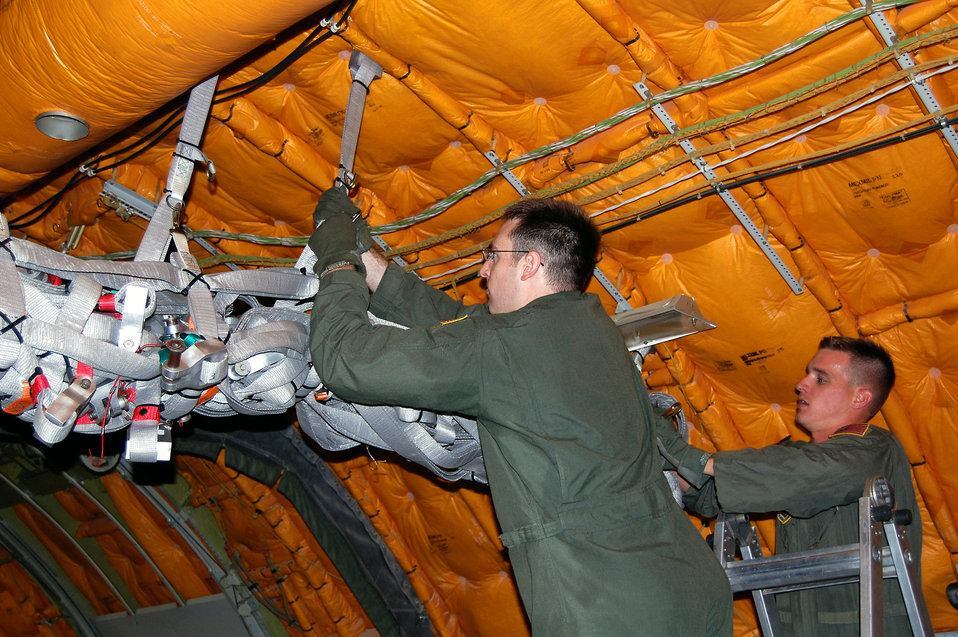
Battlelab initiative aims to speed KC-10 cargo loading

Boom operators from McGuire Air Force Base, N.J., install an alternative, lightweight cargo net inside a KC-10 Extender Sept. 16 as part of a demonstration for the Air Mobility Battlelab. The demonstration was for the battlelab's KC-10 Lightweight Cargo Net and Hoist Initiative which was recommended for use to Air Mobility Command. It was one of the last initiatives of the AMB, which deactivated Sept. 24 at the U.S. Air Force Expeditionary Center on Fort Dix, N.J.